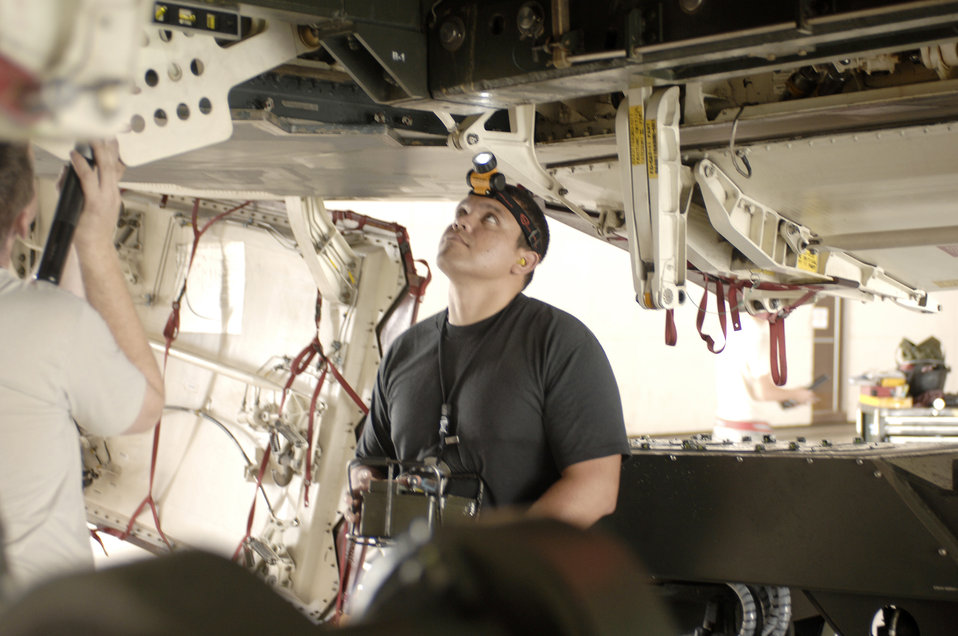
Whiteman Airmen test nuclear weapon mission

Staff Sgt. Juan Molina observes a weapons trailer position as he raises it into the bomb bay of a B-2 Spirit Aug. 17, 2009 at Whiteman Air Force Base, Mo. Mock bombs were loaded on the B-2 as part of the 72nd Test and Evaluation Squadron's Combat Sledgehammer evaluation. Sergeant Molina is assigned to the 509th Aircraft Maintenance Squadron.